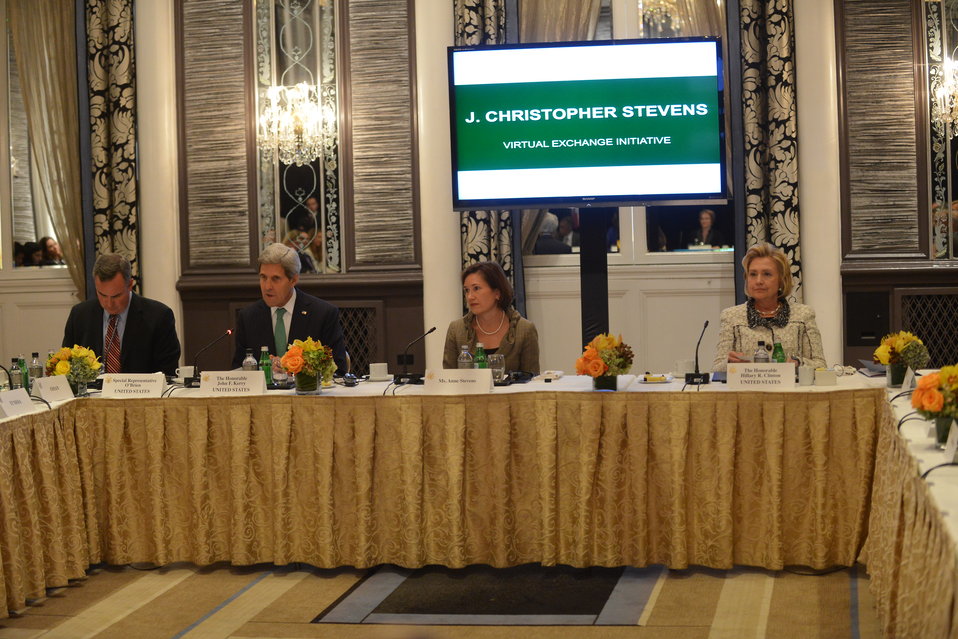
Secretary Kerry at the Chris Stevens Virtual Exchange Program Event

U.S. Secretary of State John Kerry participates in an event for the Chris Stevens Virtual Exchange Program in New York City on September 25, 2013.